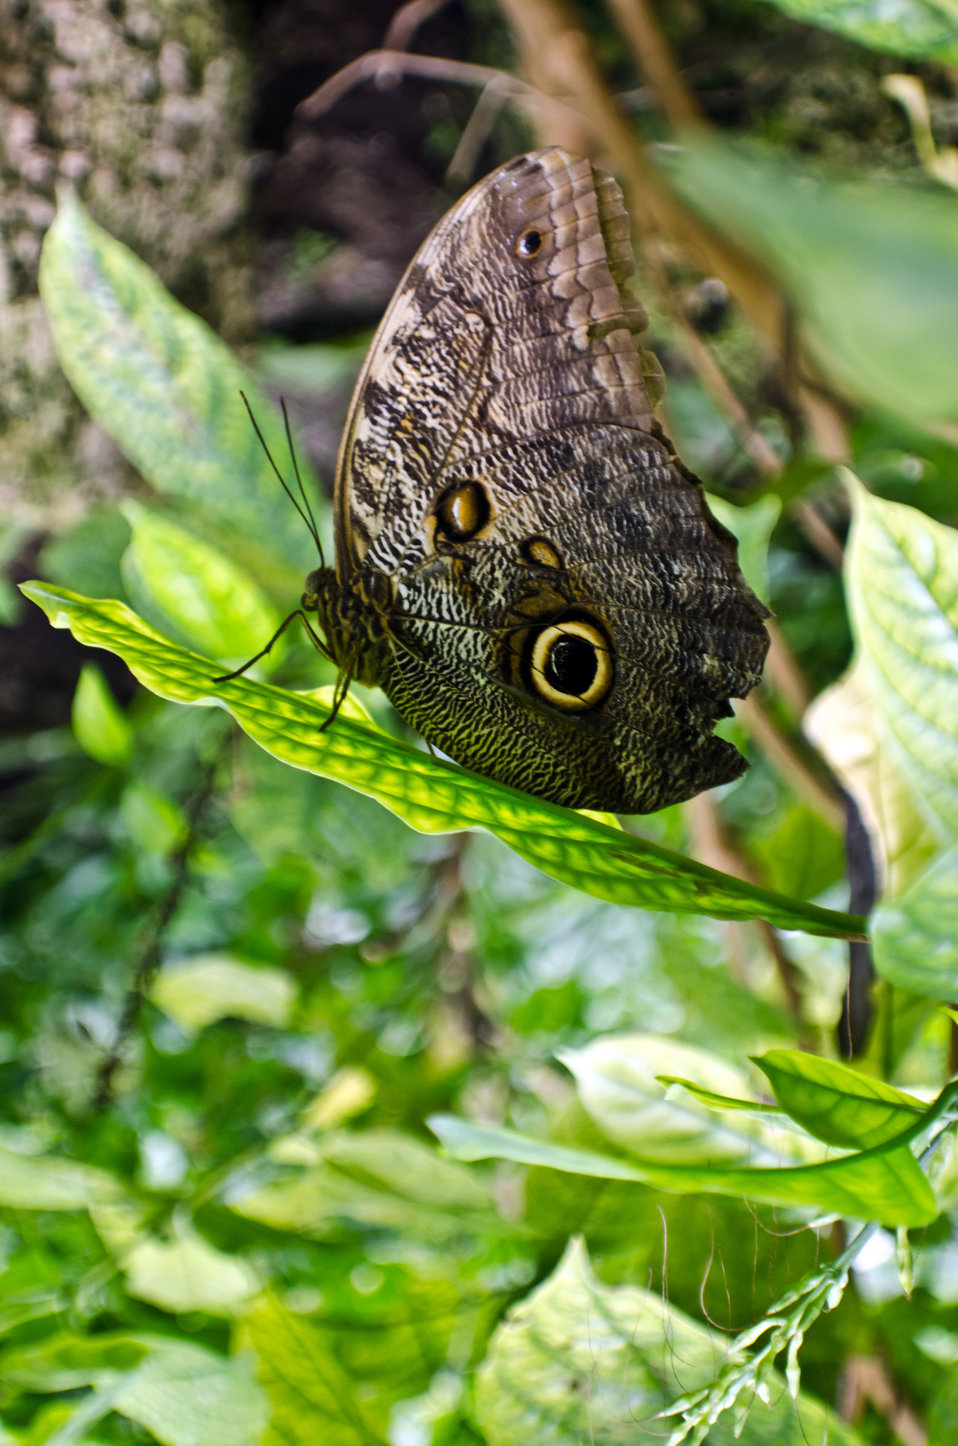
Butterfly on the leaf.